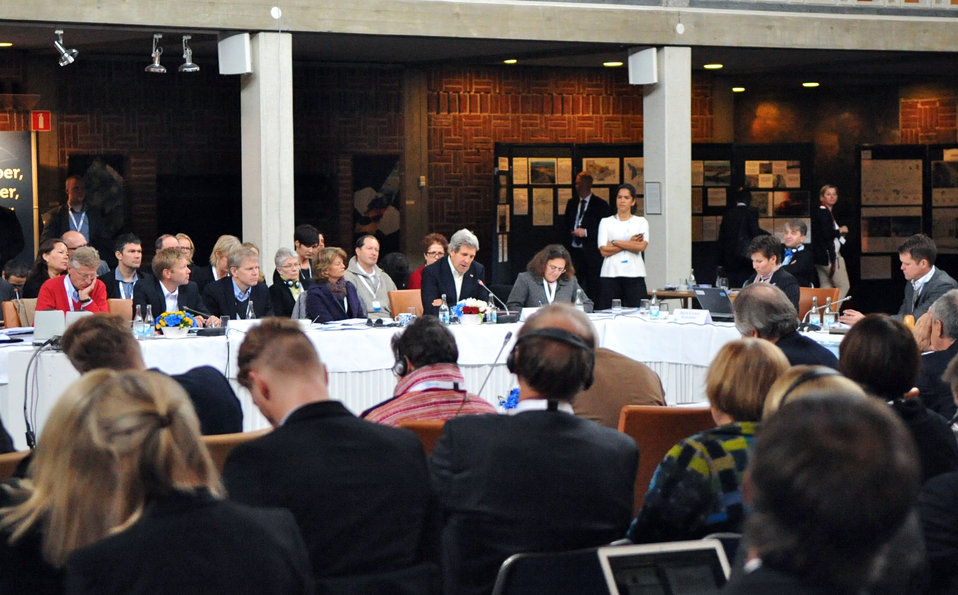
Secretary Kerry Addresses the Eighth Arctic Council Meeting

U.S. Secretary of State John Kerry addresses the Kiruna Ministerial Meeting of the eighth annual Arctic Council meeting at the City Hall in Kiruna, Sweden on May 15, 2013.